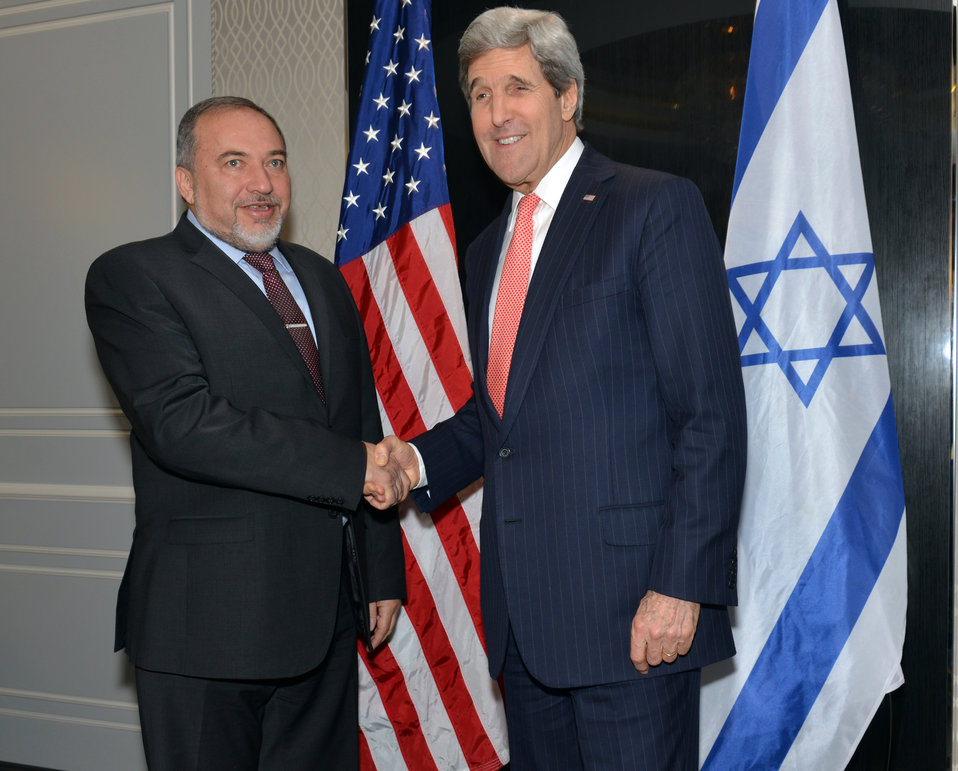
Secretary Kerry Meets With Israeli Foreign Minister Lieberman

U.S. Secretary of State John Kerry meets with Israeli Foreign Minister Avigdor Lieberman on the sidelines of meetings on Libya and Ukraine in Rome, Italy, on March 6, 2014.